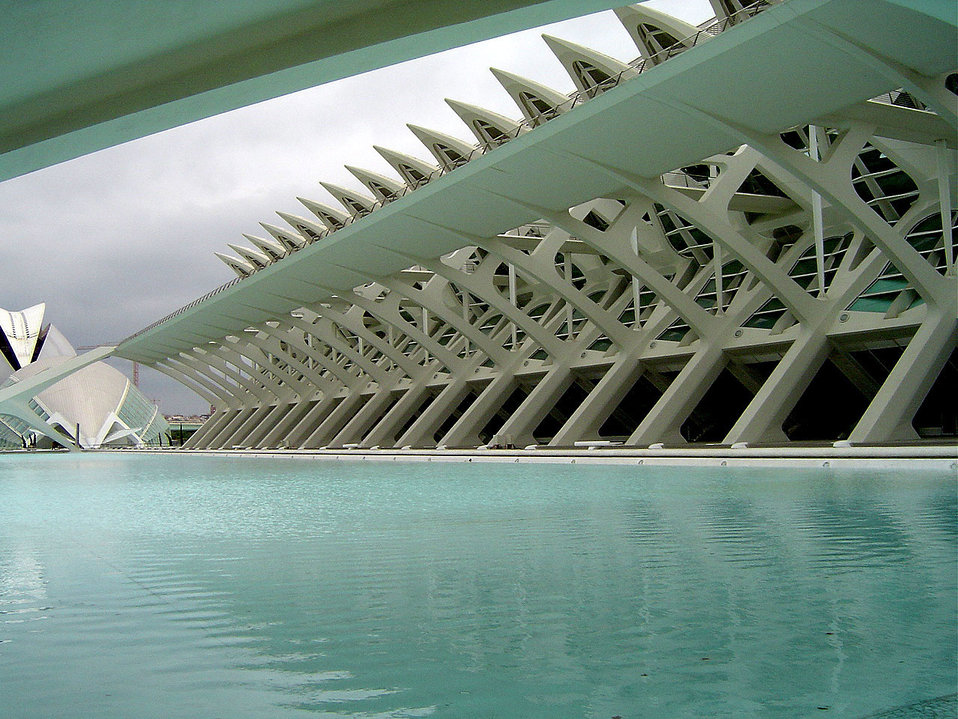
Science city

View of the facade of the city of sciences in valencia.